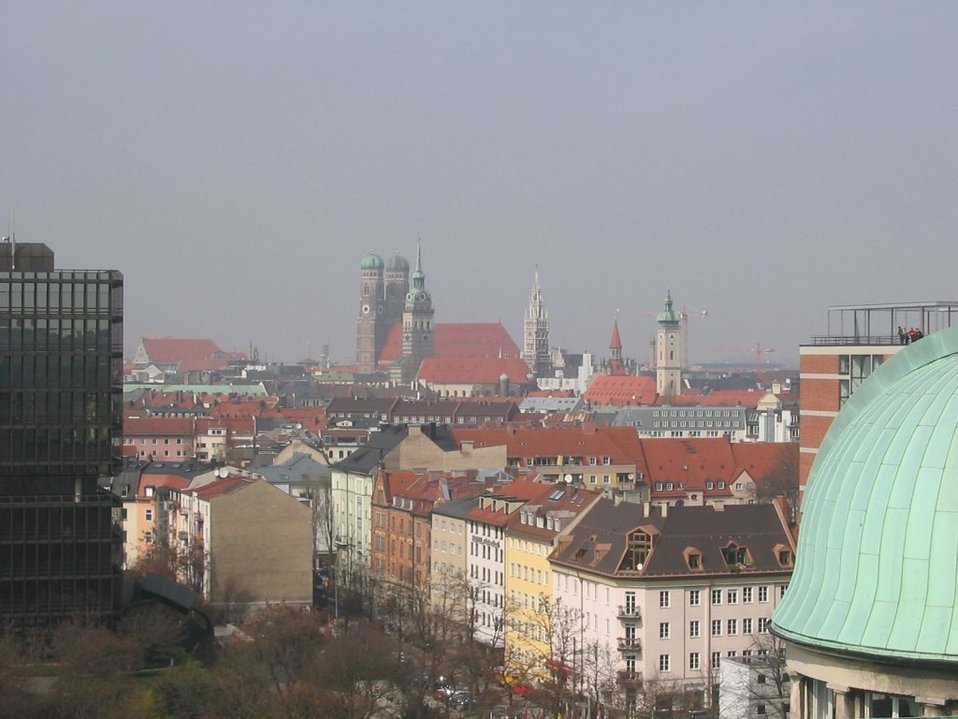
View of the central part of the city of Munich including the Frauenkirche and Town Hall from the roof of the German Museum. On the left is part of the building of the European Patent Office. Deutsch: Blick auf das Stadtzentrum von München mit Frauenkirche und Rathaus vom Dach des Deutschen Museums aus. Links ein Teil Gebäudes des Europäischen Patentamts.